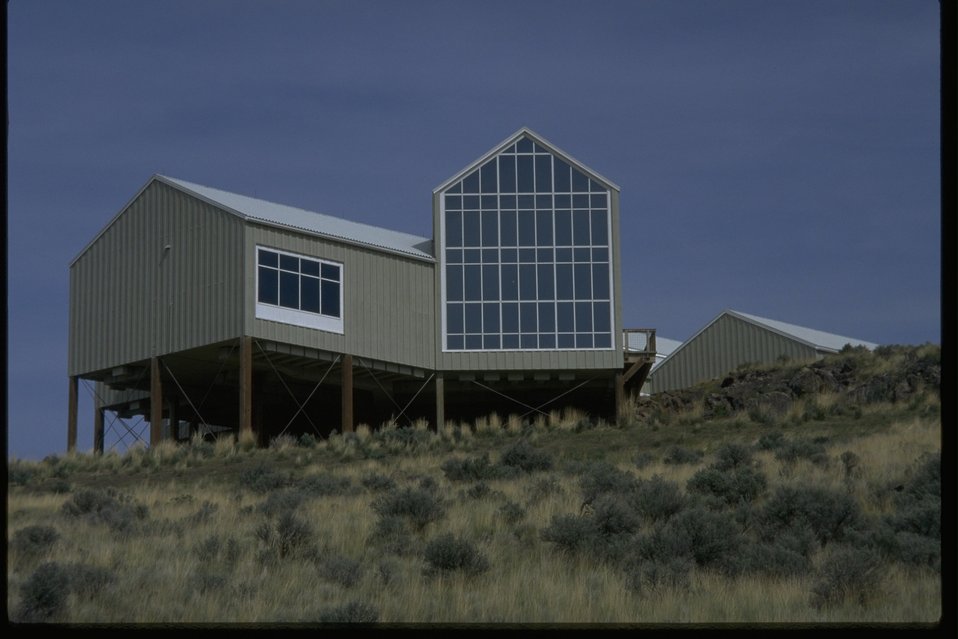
Exterior view of the NHOTIC.